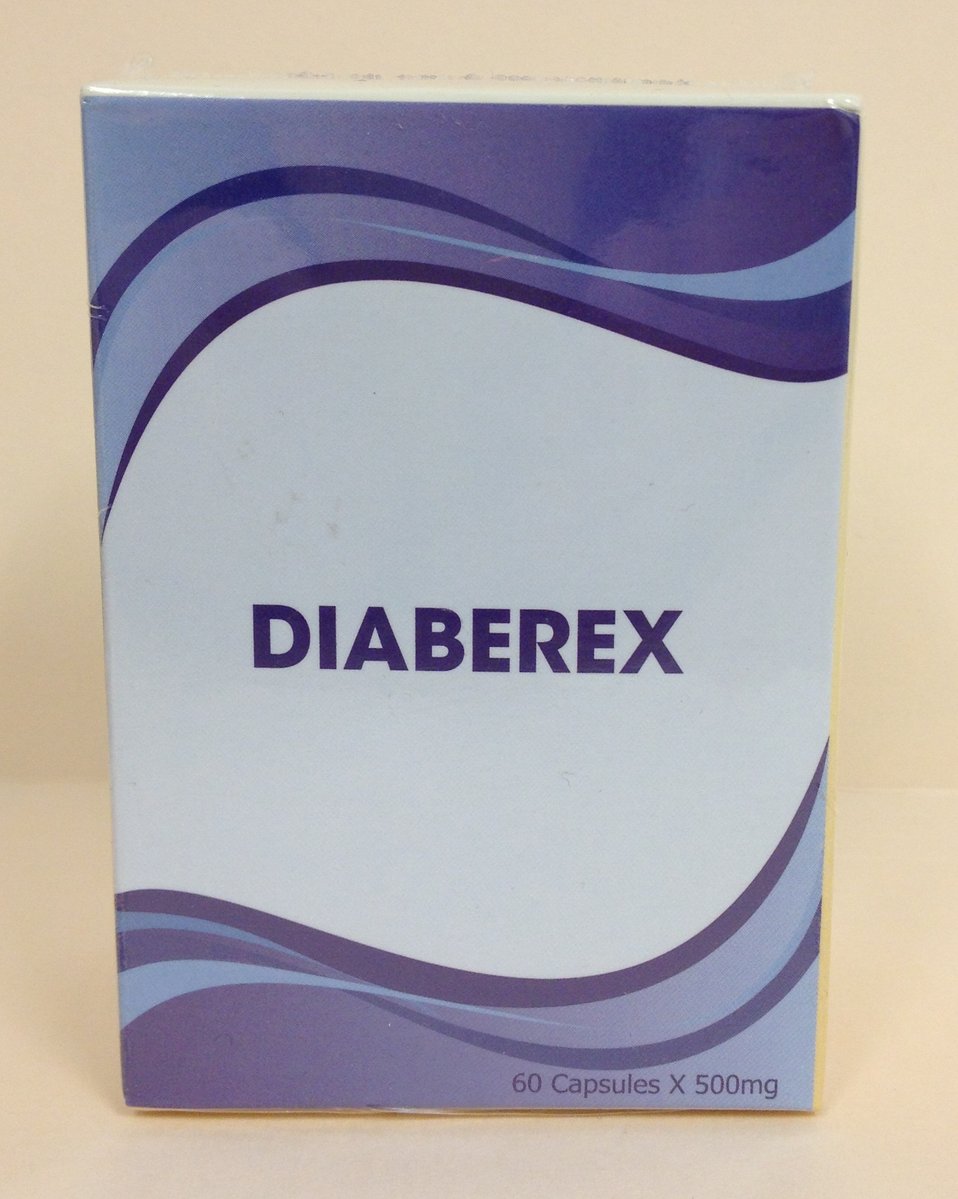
Illegally Sold Diabetes Treatments - Diaberex

This product is promoted with claims to cure diabetes. FDA warns consumers to avoid unproven and potentially unsafe products sold as treatments for diabetes.